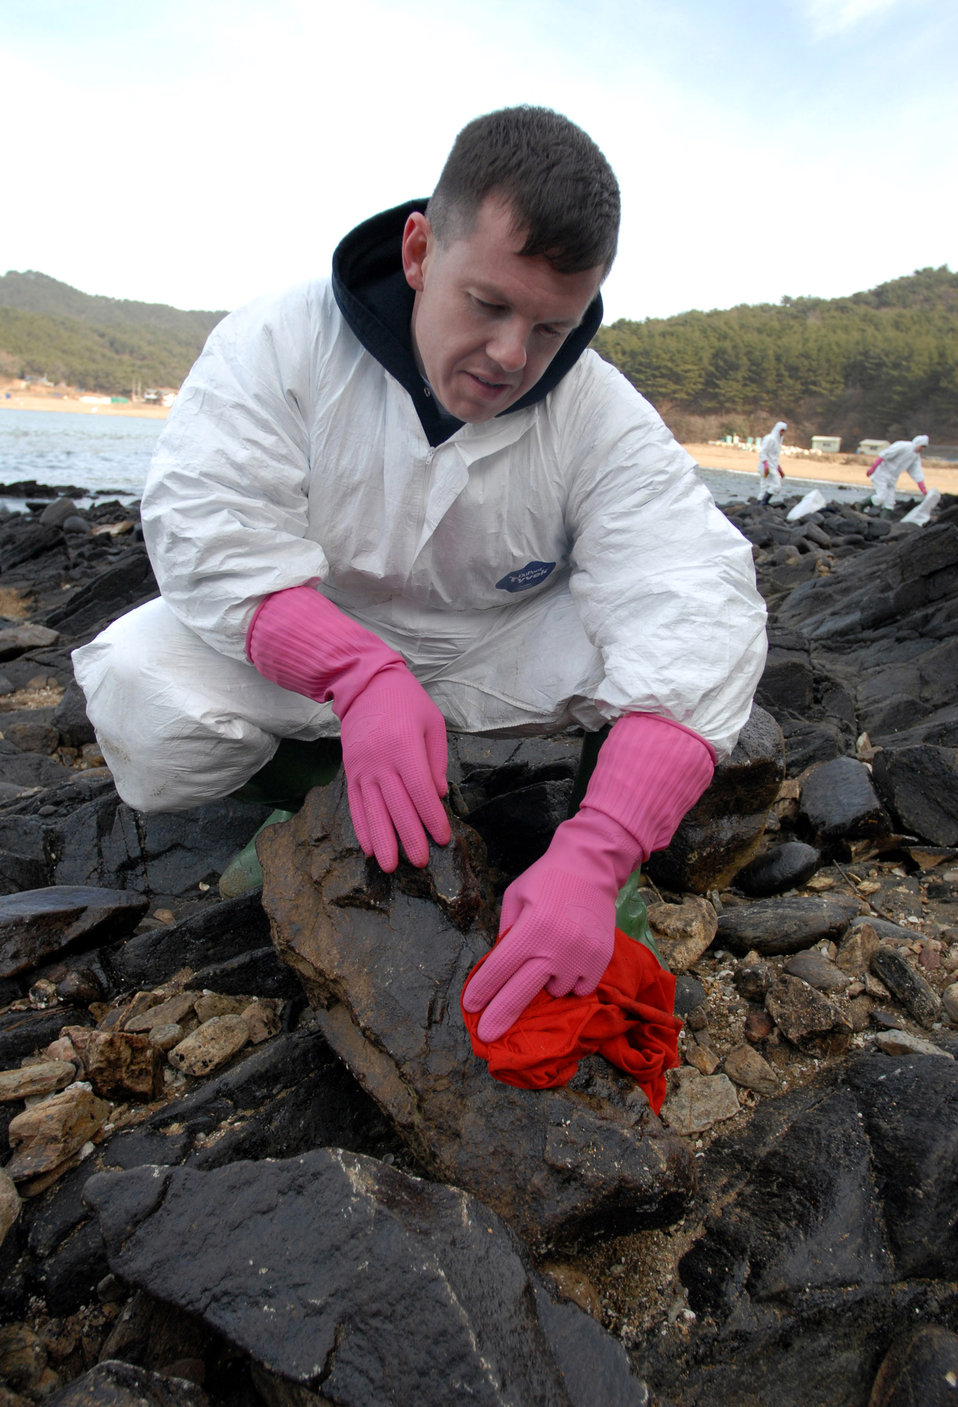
Airman, Soldiers aid local beach in oil spill clean-up

Tech. Sgt. Jason Rosenbaum cleans a rock Dec.7 after a crude oil spill from a crane barge washed oil on shore in South Korea. Over 200,000 volunteers assisted with the clean up of 2.7 million gallons of oil. Several agencies, to include 13 helicopters, 17 airplanes, 327 vessels and U.S. Air Force, Army and Korean nationals took part in the clean up efforts. Sergeant Rosenbaum is a fireman with the 8th Civil Engineer Squadron at Kunsan Air Base, South Korea.